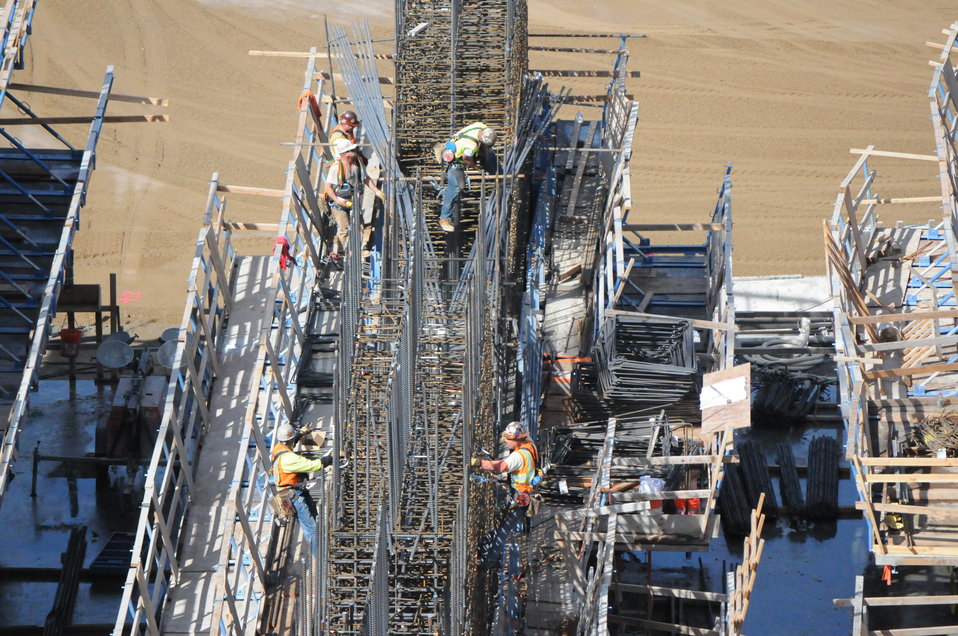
Placing Steel Rebar

Contractors working for the U.S. Army Corps of Engineers Sacramento District construct the support system for the rising Folsom Dam auxiliary spillway on March 14, 2013.